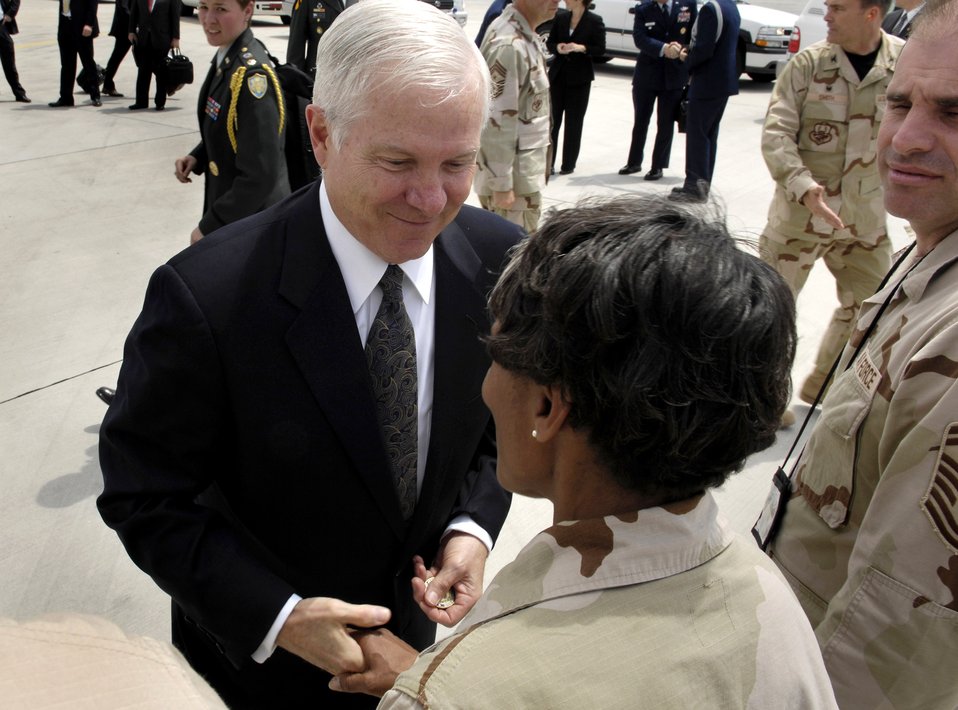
Secretary Gates pays a visit

Secretary of Defense Robert M. Gates gives a coin to an Airman deployed to Manas Air Base, Kyrgyzstan, June 5. During his travels, he used the opportunity to hear directly from the troops about their concerns and to answer their questions.